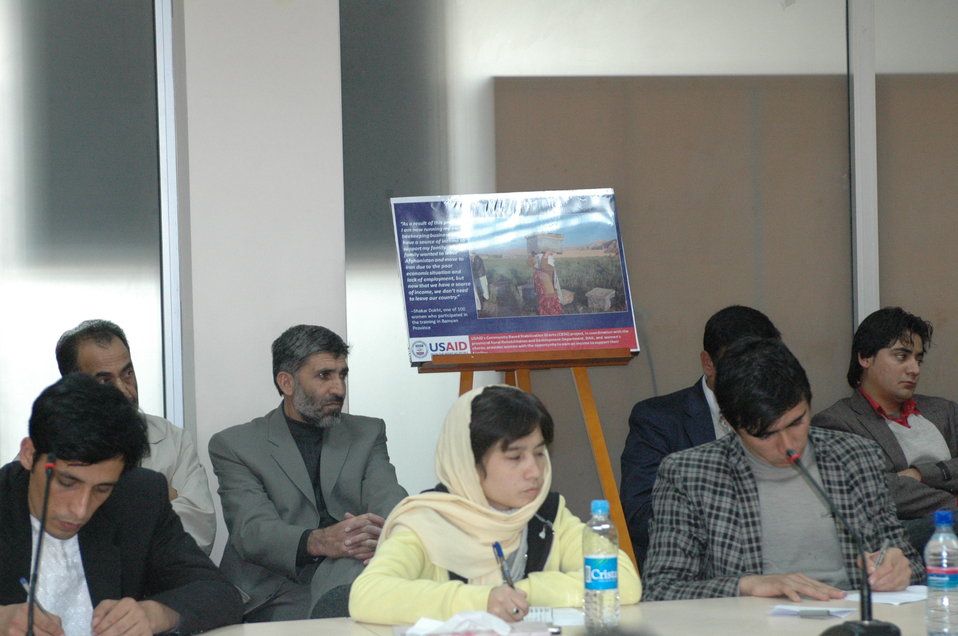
Community Based Stabilization Grants Ceremony, December 7, 2010